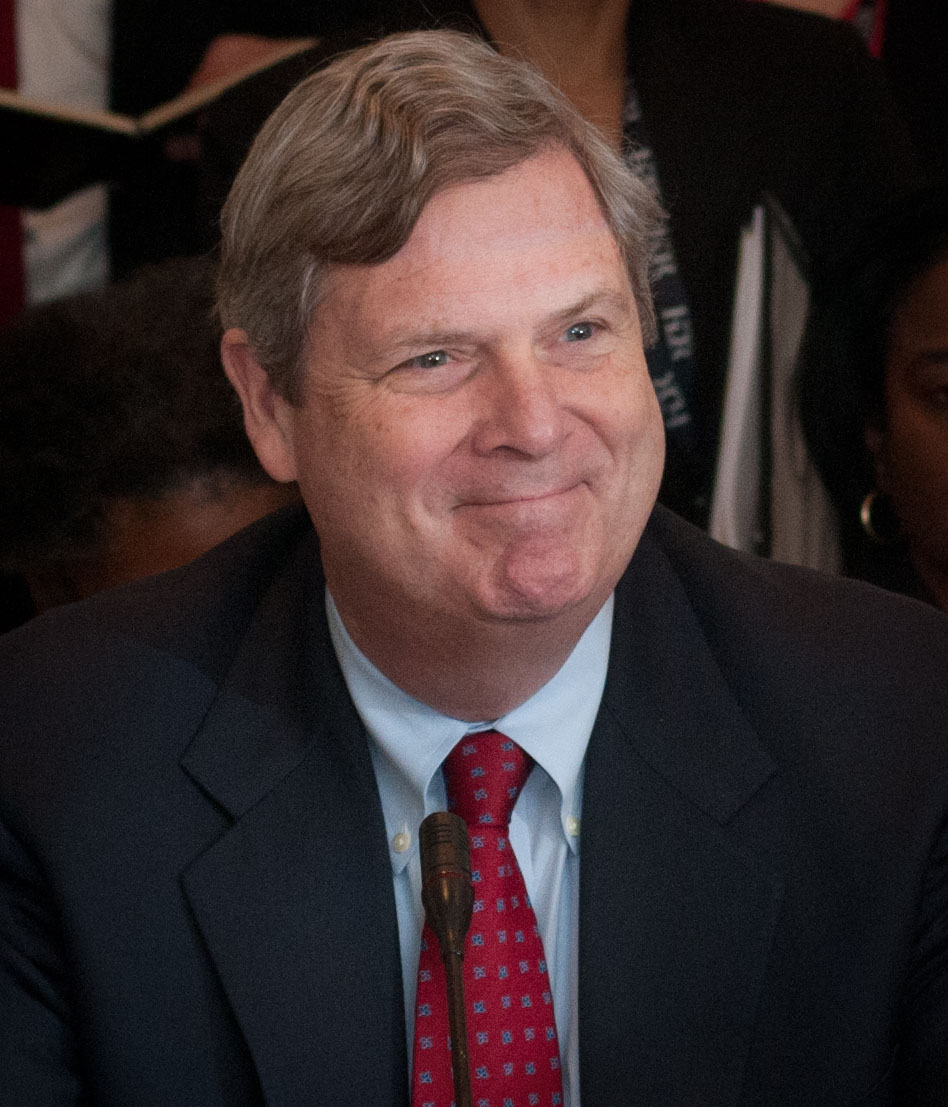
Agriculture Secretary Thomas Vilsack, enjoys a comment about sports teams from Mayor of Baltimore and Vice Chair U.S. Conference of Mayors Stephanie Rawlings-Blake, not seen, during her opening of the Food Policy session of the United States Conference of Mayors 81st Winter Meeting, in Washington D.C., on Thursday, Jan 17, 2013.